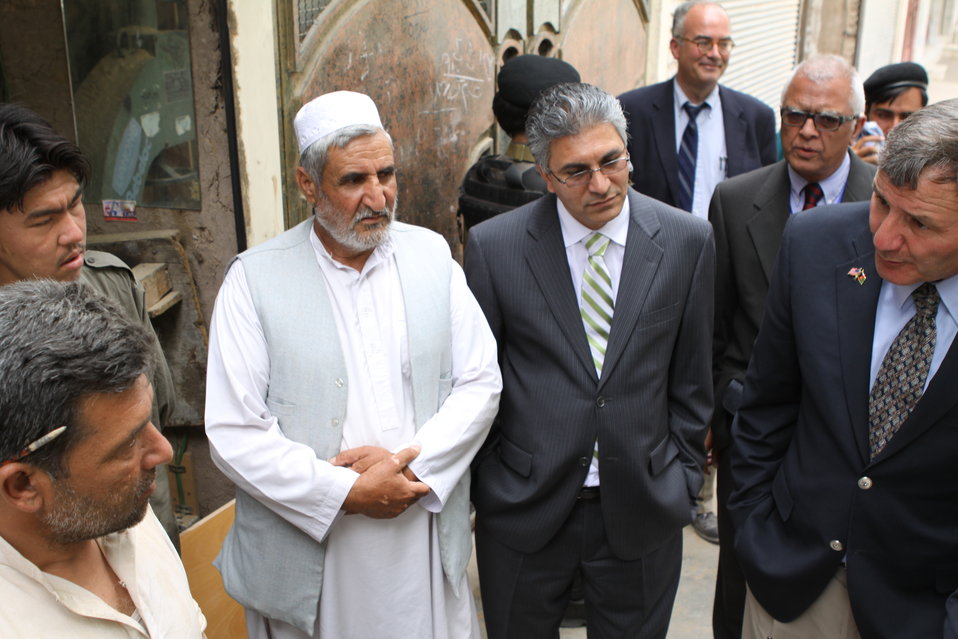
100525 Hirat Marble Conference 699